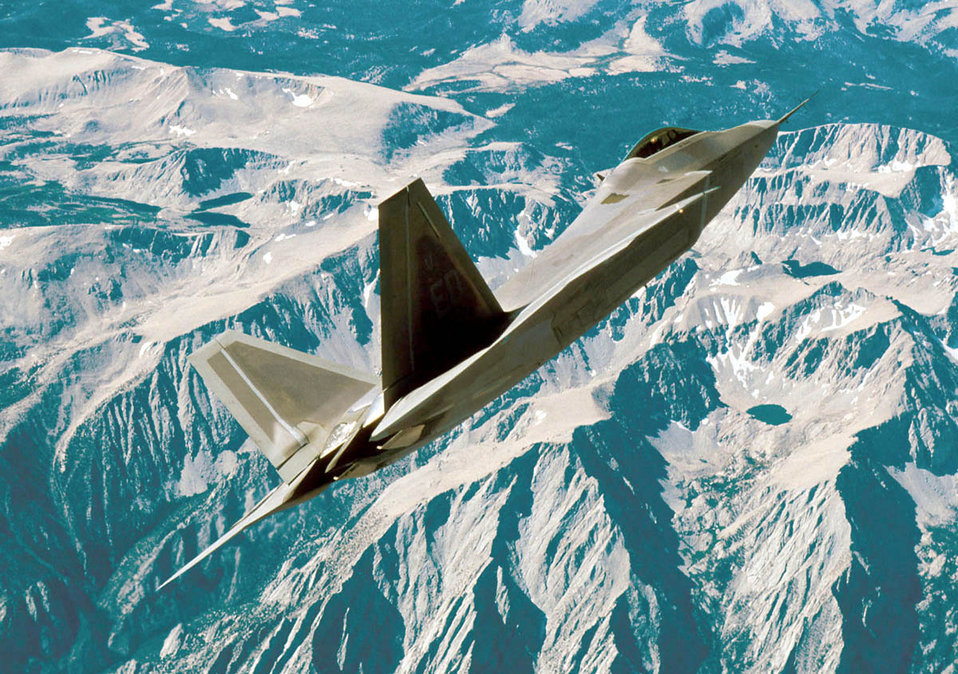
Raptor in flight

FILE PHOTO -- The application of advanced avionics software in the F/A-22 is key to the Raptor's revolutionary performance advantage over any other fighter. In the air-to-air arena, the stealthy F/A-22 will be virtually unseen on radar, while its sophisticated array of sensors and advanced radar will allow it to reach out and strike adversary aircraft undetected from long range. The advanced software package will also enhance the Raptor's ability to deliver precision air-to-surface weapons on target, day or night, in any weather.